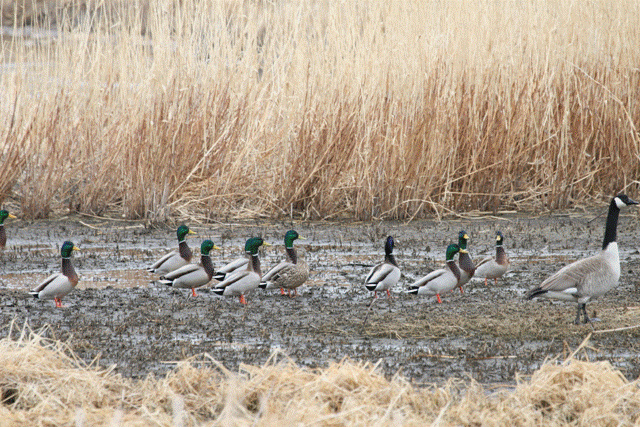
Mallards are very adaptable, able to live and even thrive in urban areas which may have supported more localized, sensitive species of waterfowl before development.